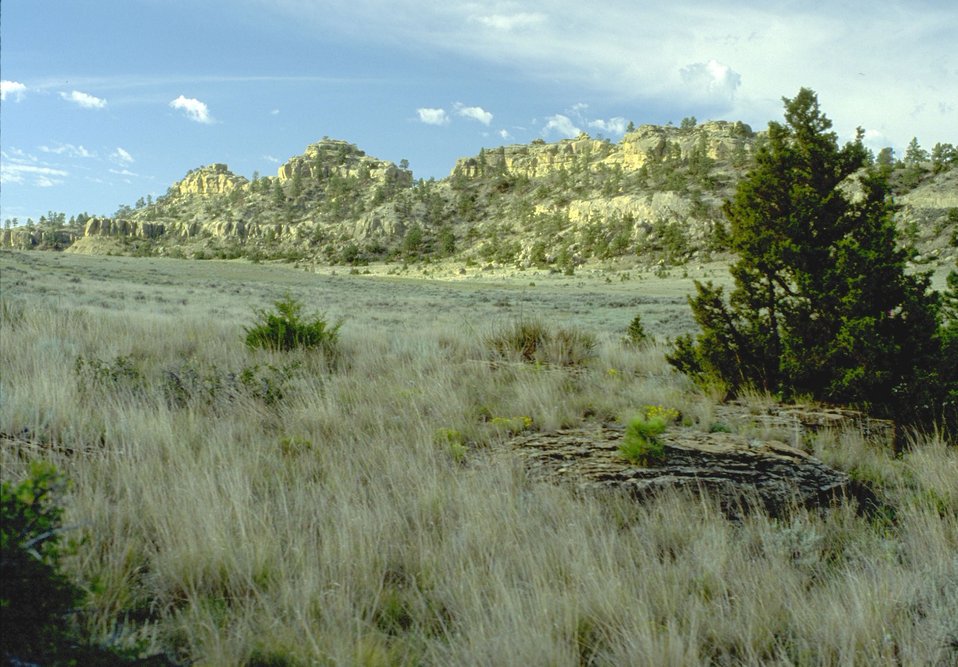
Steamboat Butte